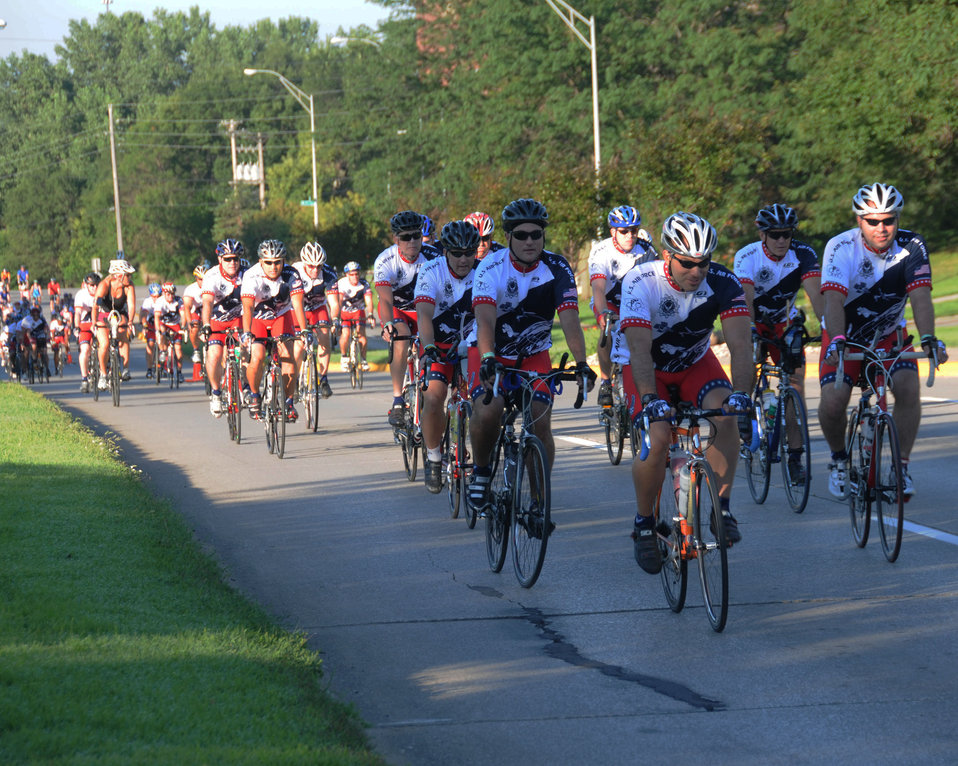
Register's Annual Great Bicycle Ride Across Iowa

Members of the Air Force Cycling Team near the top of the first hill of the day as they begin to pedal across Iowa during The Register's Annual Great Bicycle Ride Across Iowa, also known as RAGBRAI. Riders from throughout the Air Force came to Sioux City, Iowa, located on the Missouri River to the west, to start their trek that would take them seven days and 442 miles east to get to Dubuque, Iowa, and the Mississippi River.